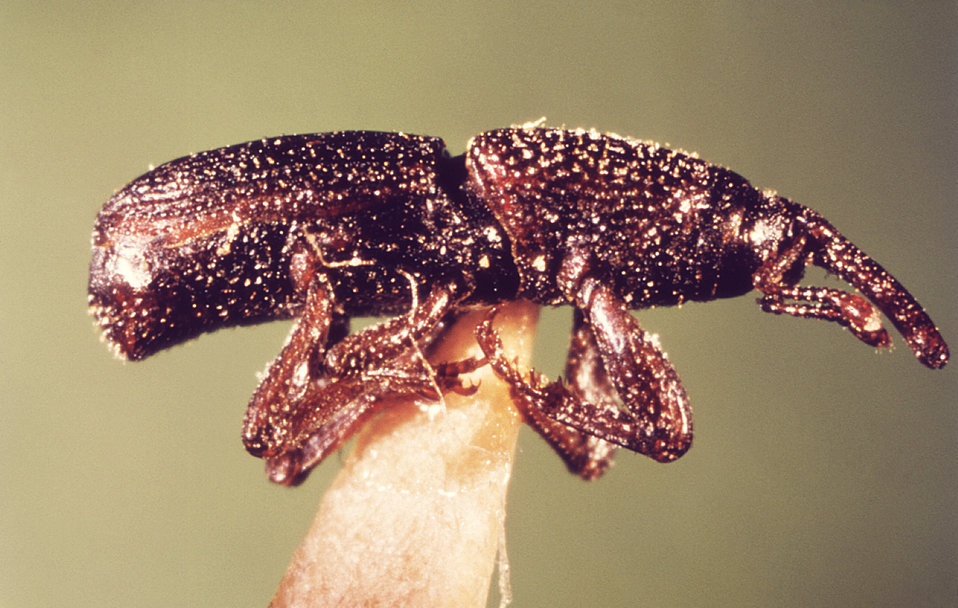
This is a lateral view of a granary weevil, Sitophilus granarius whose allergens can cause 'Millworkers asthma'.